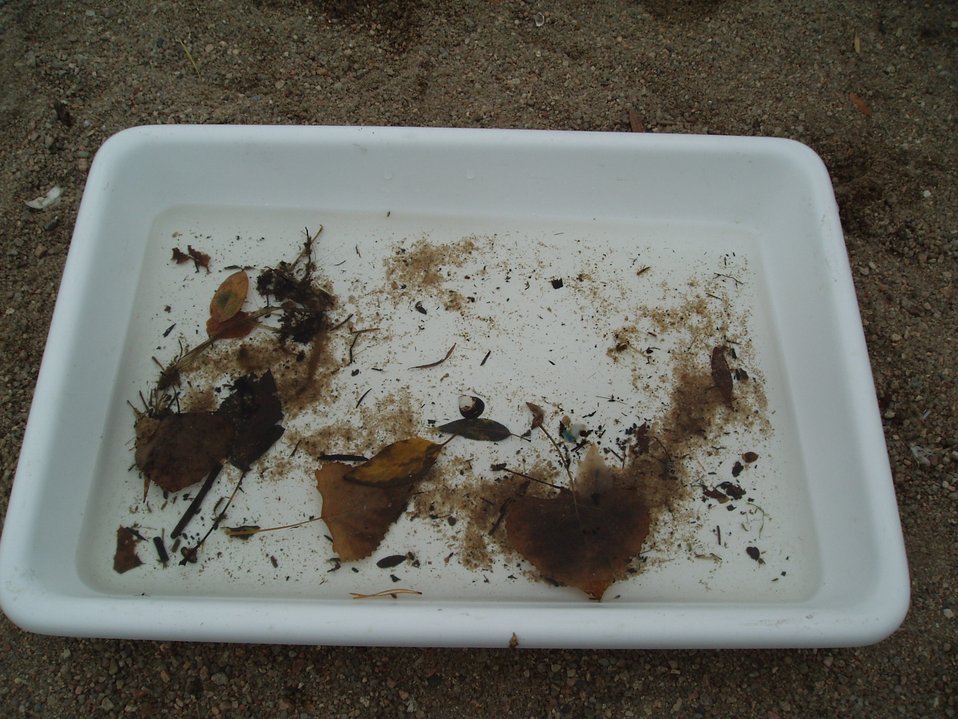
Samples of Macro Invertebrates at World Water Monitoring Day

Students saw macro invertebrates caught directly from the river by adult volunteers. The specimens were later released back into the river after each student had a chance to view and study them.